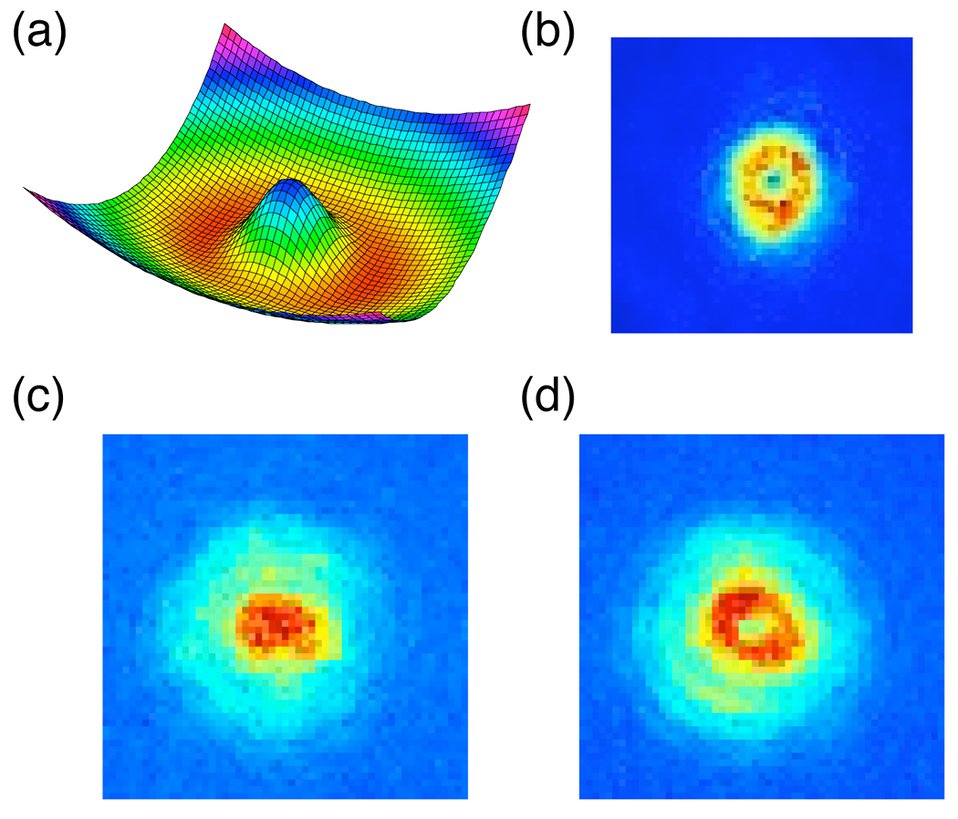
BEC; Persistent Flow in a Gas

(a) In a donut, shaped, or 'toroidal' trap, atoms mostly exist in a red ring, and do not reside in the center (blue region), which represents an energy hill they cannot climb. (b) Image of a Bose-Einstein condensate (BEC) in the donut trap. (c) When there is no fluid flow around the donut, and the trap is turned off, atoms (red) rush to the center. (d) When fluid flows around the donut, and the trap is turned off, the current around the donut persists, and does not rush to fill the hole.